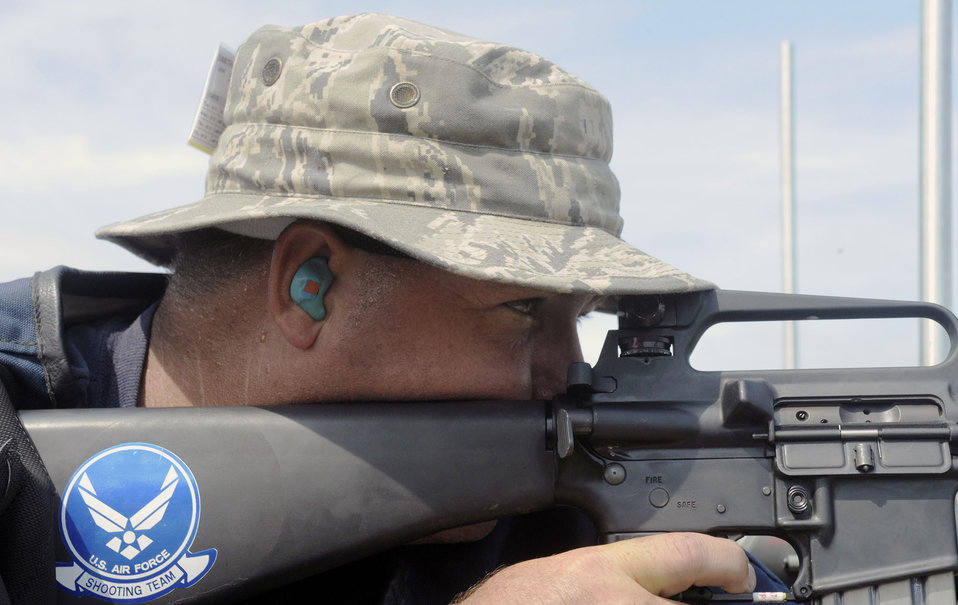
USAF shooting team aims for excellence at national competition

Tech. Sgt. Darryl Smith, a member of the U.S. Air Force Shooting Team, prepares to fire at his target from the seated position during the 200-meter portion of the high power rifle competition of the 2009 National Rifle and Pistol Championships Aug. 11 at Camp Perry, Ohio. Sergeant Smith is an Aerospace Ground Equipment specialist with the 355th Equipment Maintenance Squadron at Davis-Monthan Air Force Base, Ariz.